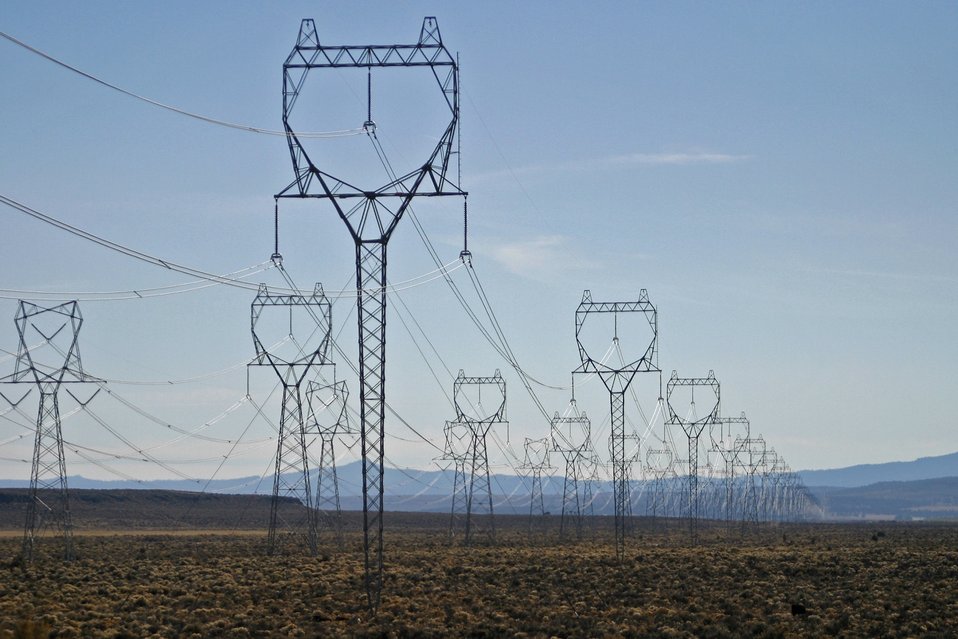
Power transmisson lines cross BLM lands in eastern Oregon.